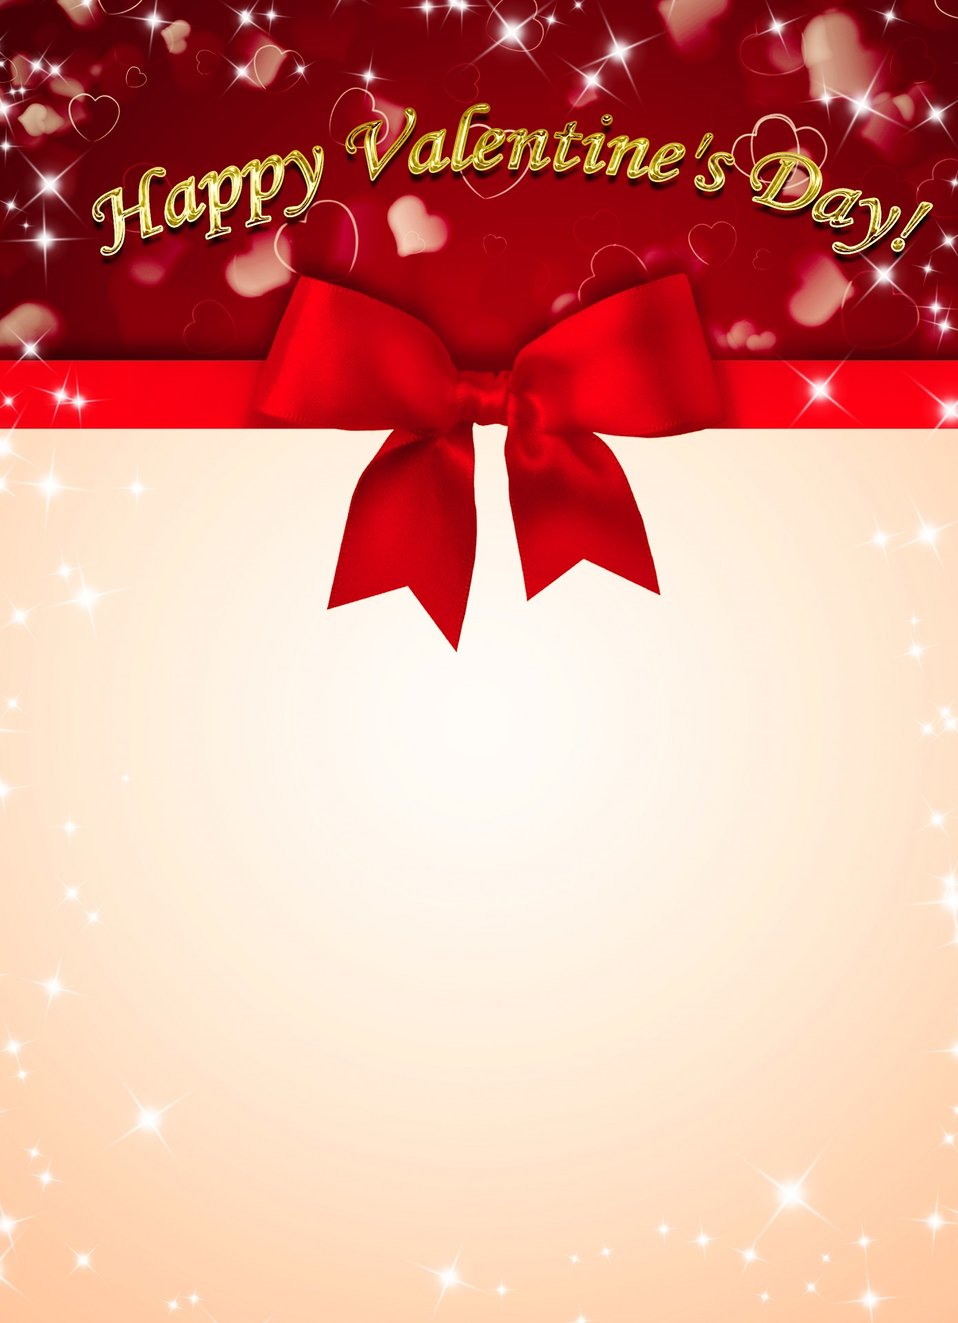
Abstract background with bows

Beautiful background with bows and hearts.